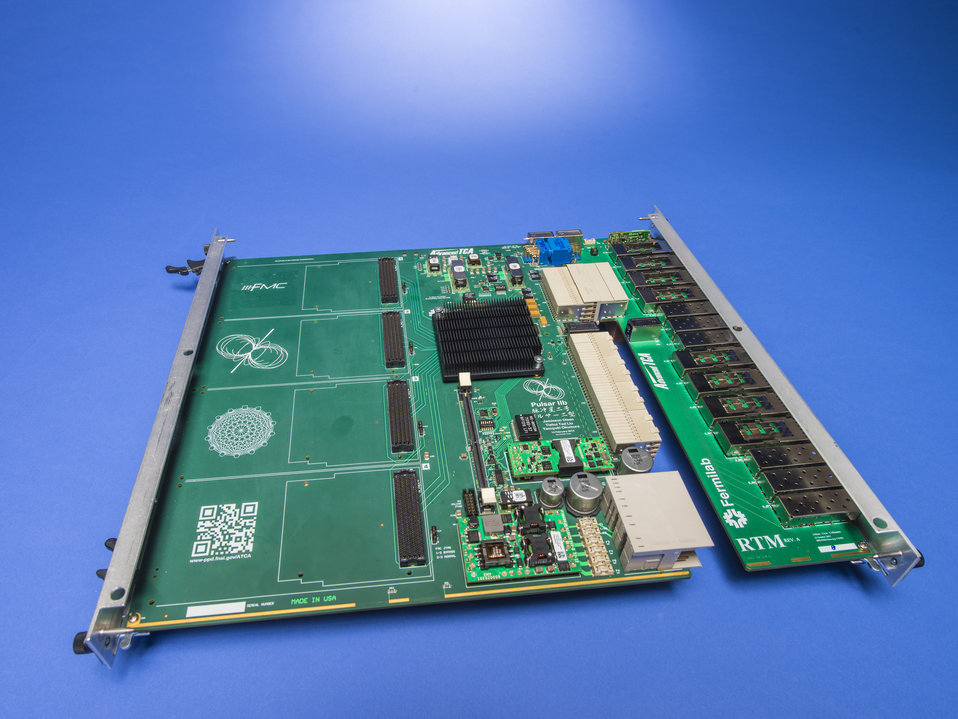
FULL-MESH ENABLED ATCA DATA PROCESSING BOARD, PULSAR II AT THE FERMI NATIONAL ACCELERATOR LABORATORY.